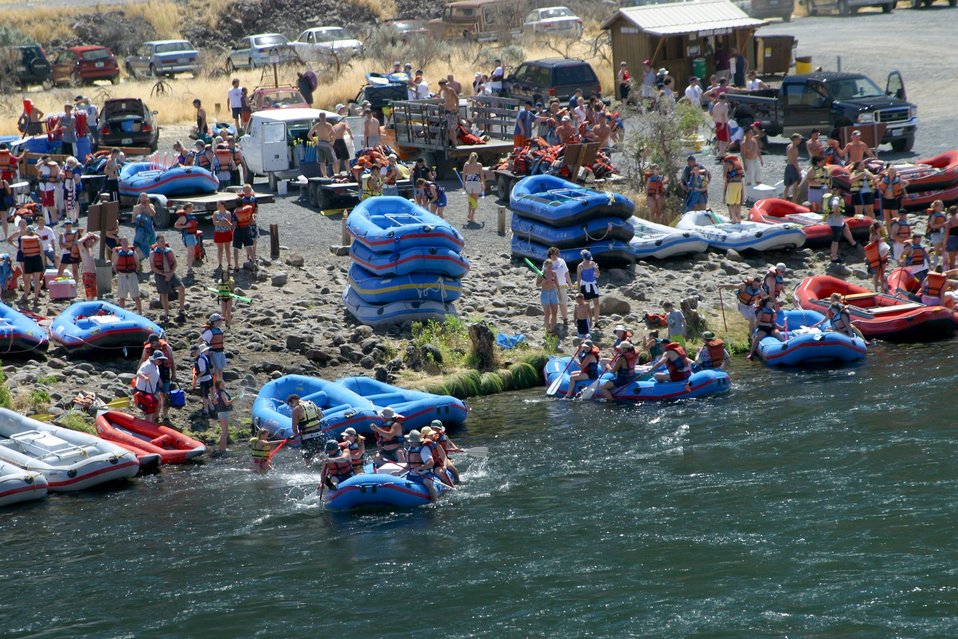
Over 200,000 people a year float the Lower Deshutes River.